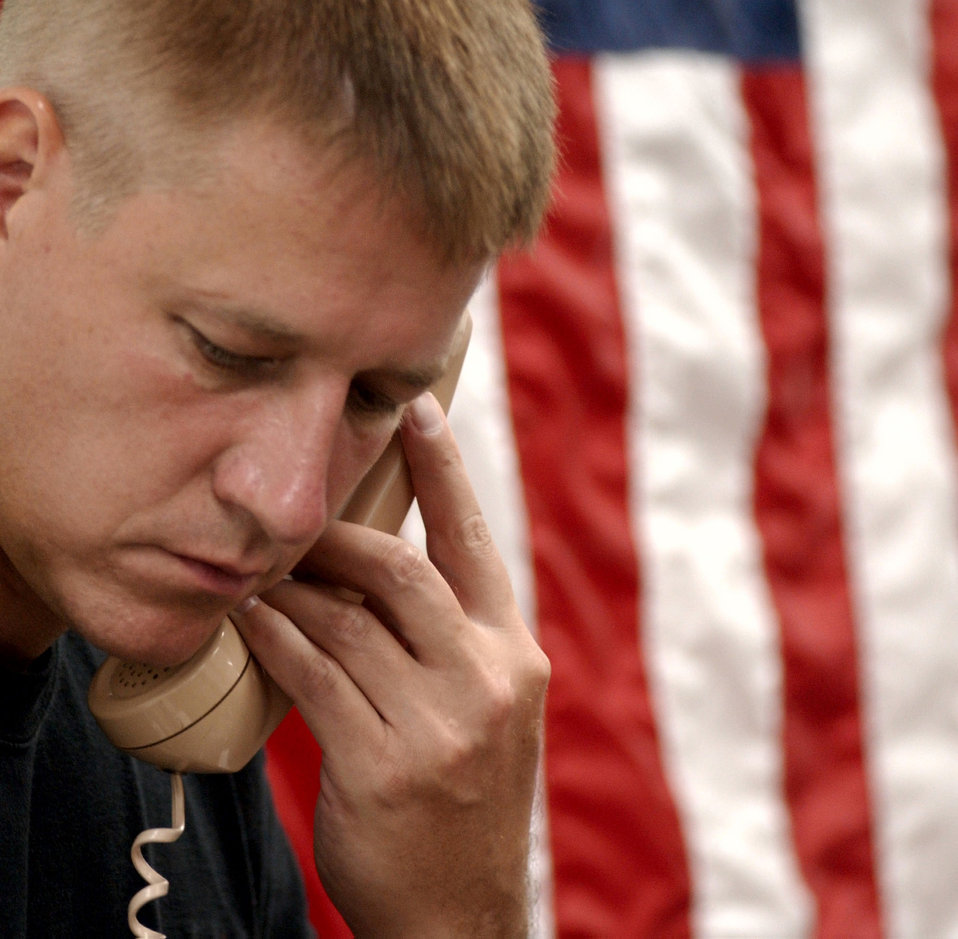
Work orders

OPERATION ENDURING FREEDOM -- An Air Force engineering and installation technician from the 28th Air Expeditionary Wing coordinates a work order over the phone at an operation location during Operation Enduring Freedom. The engineering and installation team is upgrading the infrastructure for U.S. Pacific Air Forces.